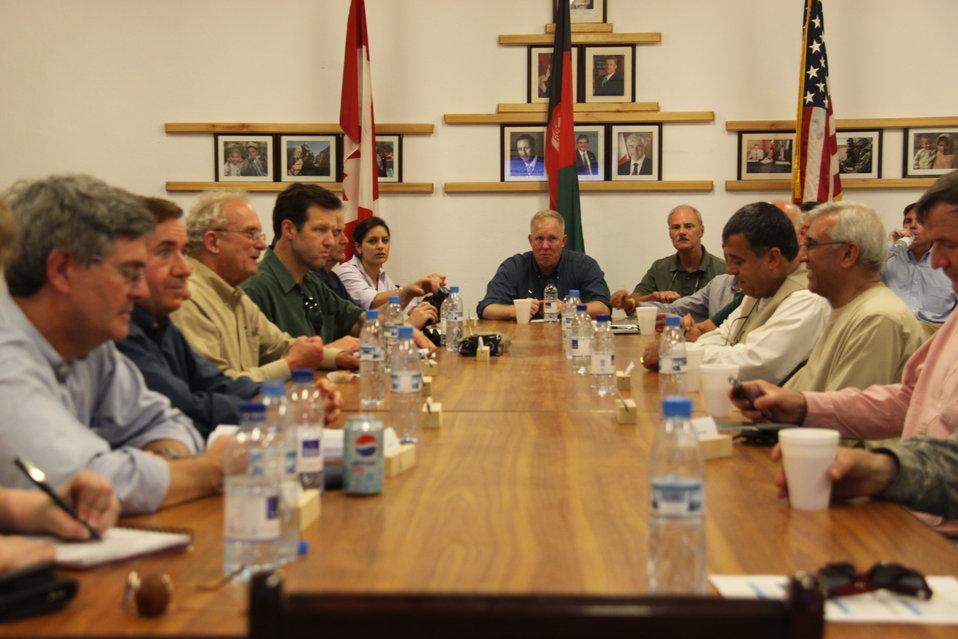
Meeting with Local Leaders in Kandahar